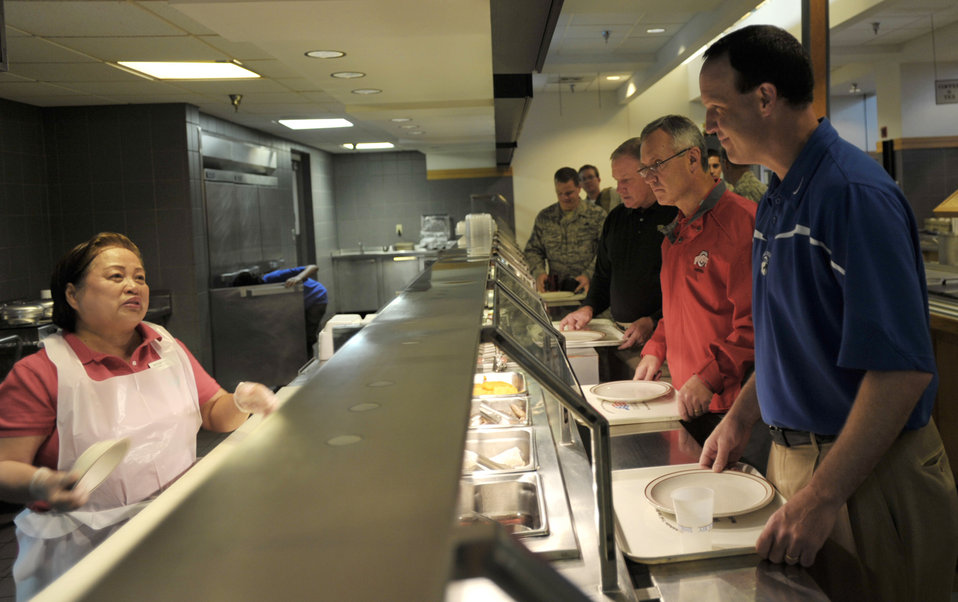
NCAA coaches visit troops in military hospital

Air Force Coach Troy Calhoun of Air Force (in blue), Ohio State Coach Jim Tressel (in red) and Wake Forest Coach Jim Grobe (in black) tell Teresita Walline what they would like for breakfast May 28 at Ramstein Air Base, Germany. Walline is a mess attendant at the base dining facility, where the coaches soon after attended a breakfast with active-duty, Reserve and Air National Guard Airmen.